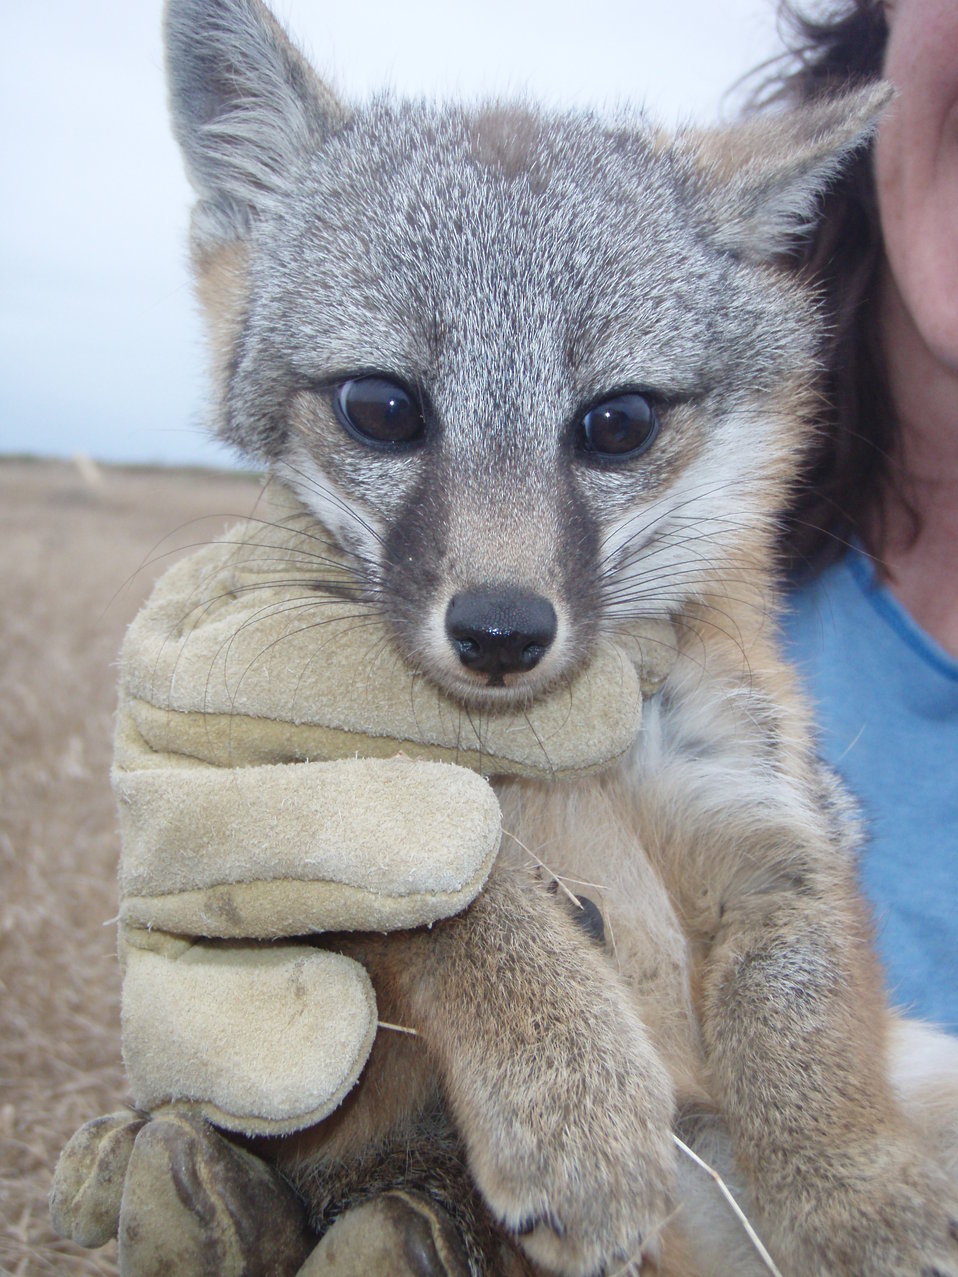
Island Fox Pup

There are 6 subspecies of island fox, each named for the specific Channel Island they inhabit. Four of the subspecies - San Miguel, Santa Barbara, Santa Rosa, and Santa Catalina island fox - were federally listed as endangered in 2004.